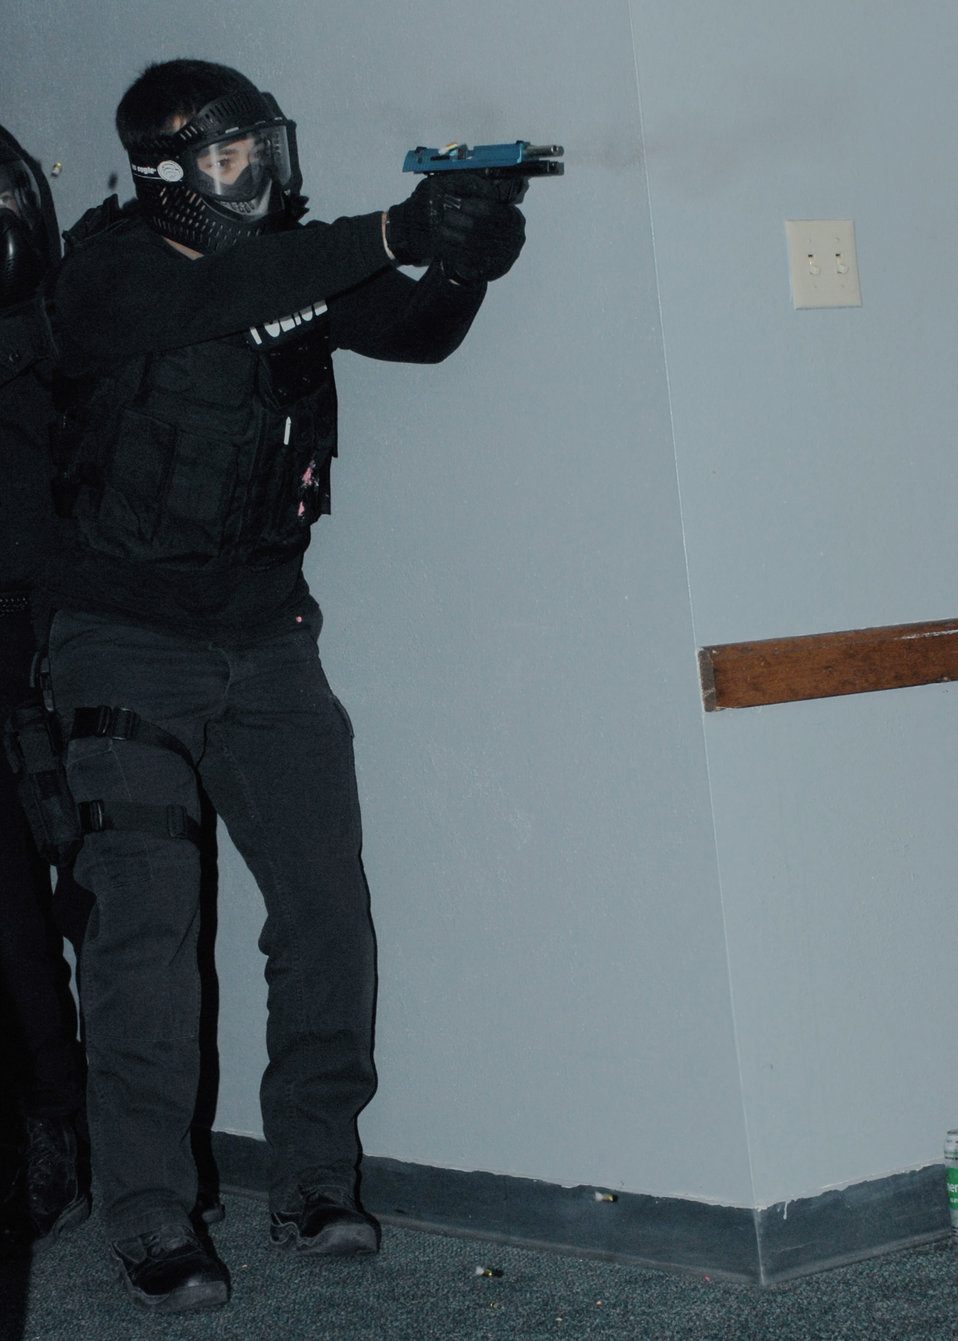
Joint Security Forces Training

A local police officer fires a simunition round toward an active shooter during a training course May 7 at Cannon Air Force Base, N.M. The three-day Patrol Response to Active Shooter course is taught by National Tactical Officers Association members.